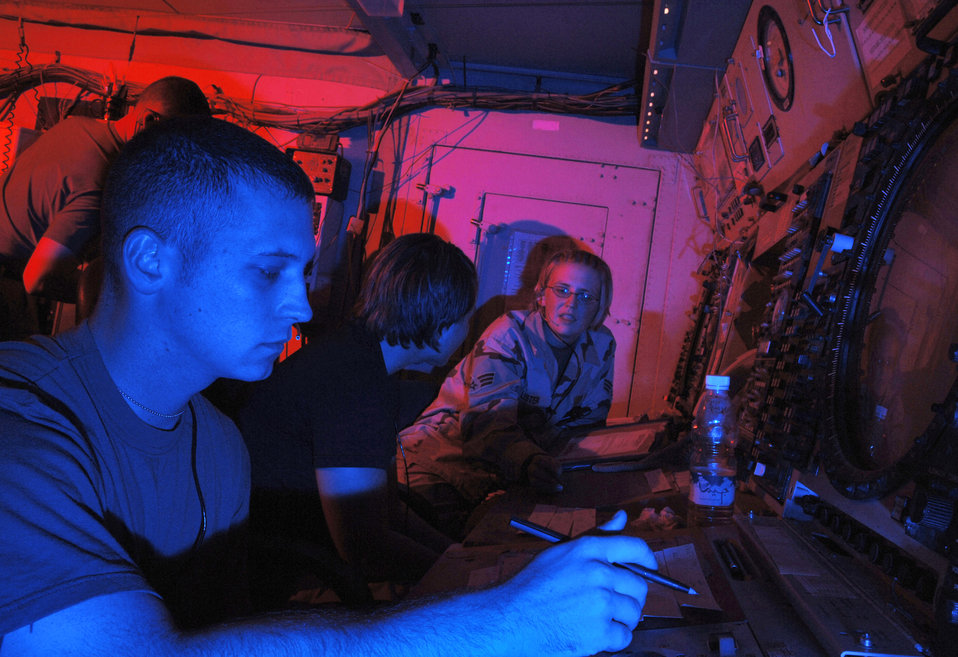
Air traffic controllers perform dual mission, put fighters on target

ALI BASE, Iraq -- (Left to right) Senior Airman Paul Oceanak monitors the radar scope while Senior Airman Megan Lister teaches Senior Airman Bobbie Tenney how to juggle both civil and combat air traffic. Putting fighters on target is a first for the crew of controllers who direct airplane traffic within 50,000 square miles surrounding Ali Base. The three Airmen are area control center controllers with the 407th Expeditionary Operations Support Squadron.